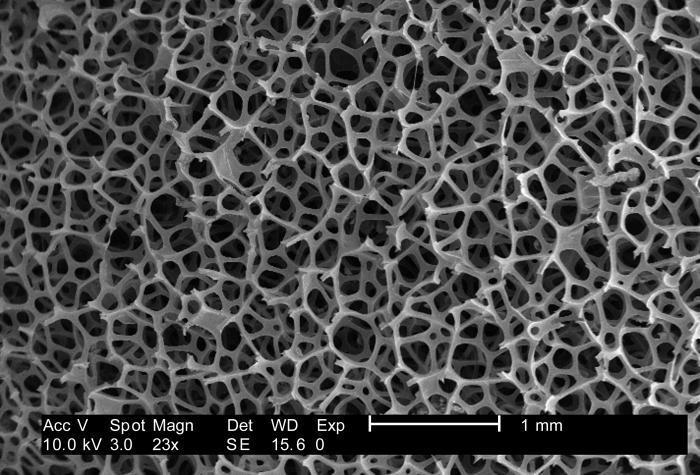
Under a low magnification of 23x, this 2007 scanning electron micrograph (SEM) depicted the fibrous configuration of a dry macrofoam sponge swab. This swab, as well as three other materials, including polyester (see PHIL 9735), rayon (see PHIL 9734), and cotton (see PHIL 9732, 9733) were scanned for a CDC study involving their efficiency in recovery of Bacillus anthracis bacterial spores from steel coupons that had been inoculated with a spore suspension of known concentration. See PHIL 9737, and 9738 for other views of this material. The article discussing the description of this swab material analysis, and the analytical results was published in 'Emerging Infectious Diseases', Vol. 10, No. 6, June, 2004, and was entitled, Swab Materials and Bacillus anthracis Spore Recovery from Nonporous Surfaces. A link to this article is found below.